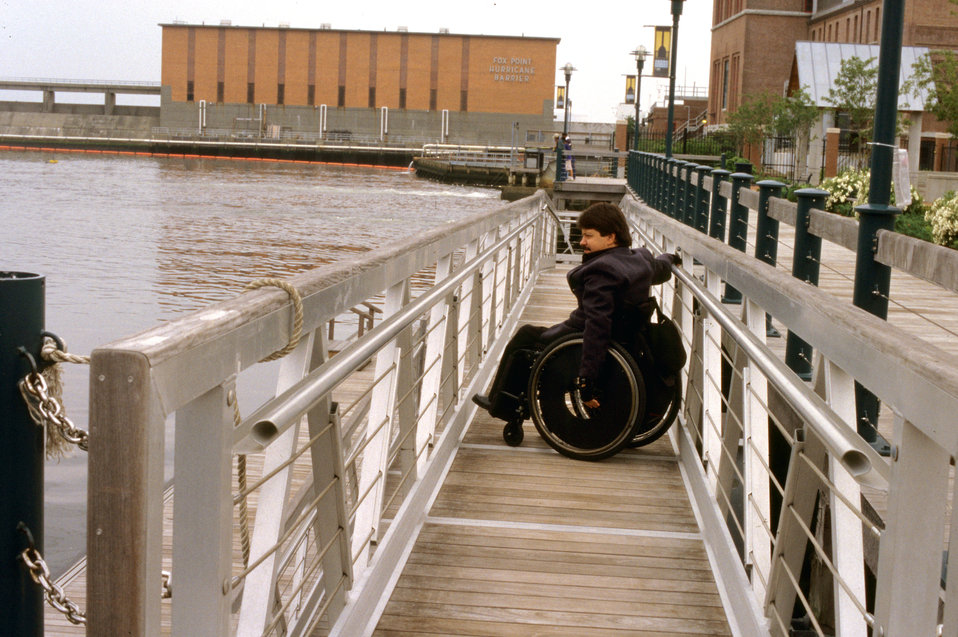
In this 2003 image, a wheelchair-seated man was positioned upon a ferry terminal dock, while awaiting the arrival of the ferry transport. Note that in the background there was an adjustable, inclined access ramp, which assured that regardless of the water level, everyone would have a safe and easy way to embark and disembark from ships and ferries. The ramp was in consideration of the wide range of visitors who'd be interacting with this facility, some of whom would be mobility-challenged such as this man.